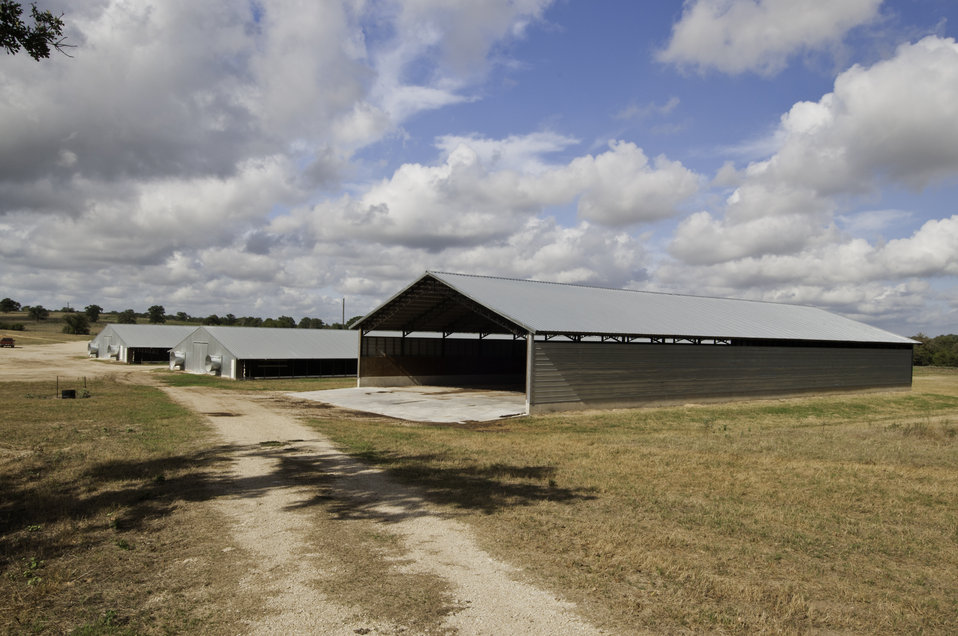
A dry stacking process is used to store solid poultry waste on the Bobby Morgan Poultry Farm in Luling, TX on Aug. 23, 2013.